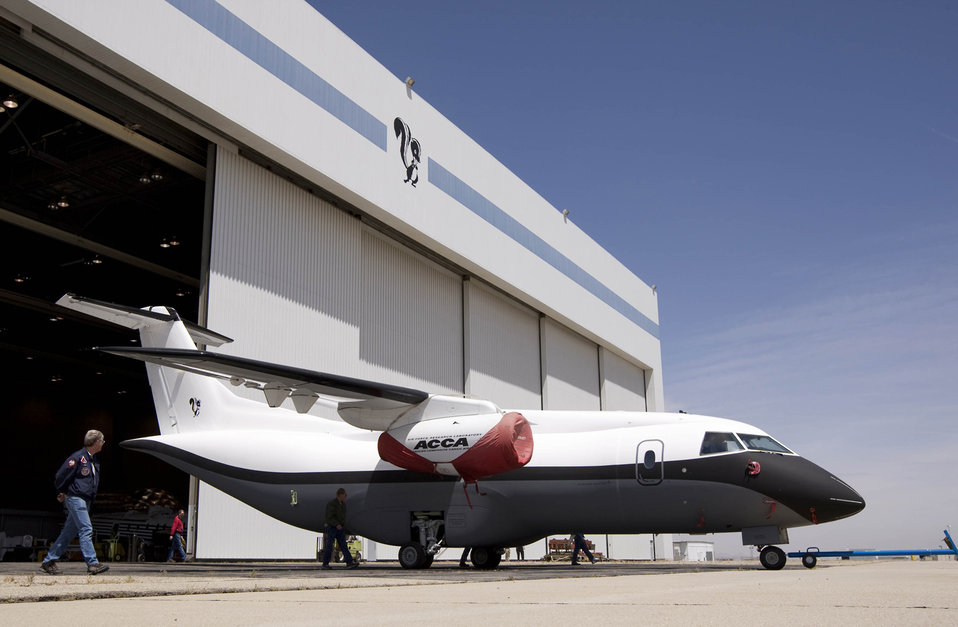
Advanced composite cargo aircraft makes first flight

The Advanced Composite Cargo Aircraft rolls out of a hangar in May at Lockheed Martin's Skunk Works plant in Palmdale, Calif. The ACCA is a modified Dornier 328J aircraft. The fuselage aft of the crew station and the vertical tail were removed and replaced with completely new structural designs made of advanced composite materials fabricated using out-of-autoclave curing. Air Force Research Laboratory officials at Wright-Patterson Air Force Base, Ohio, oversee the ACCA program.